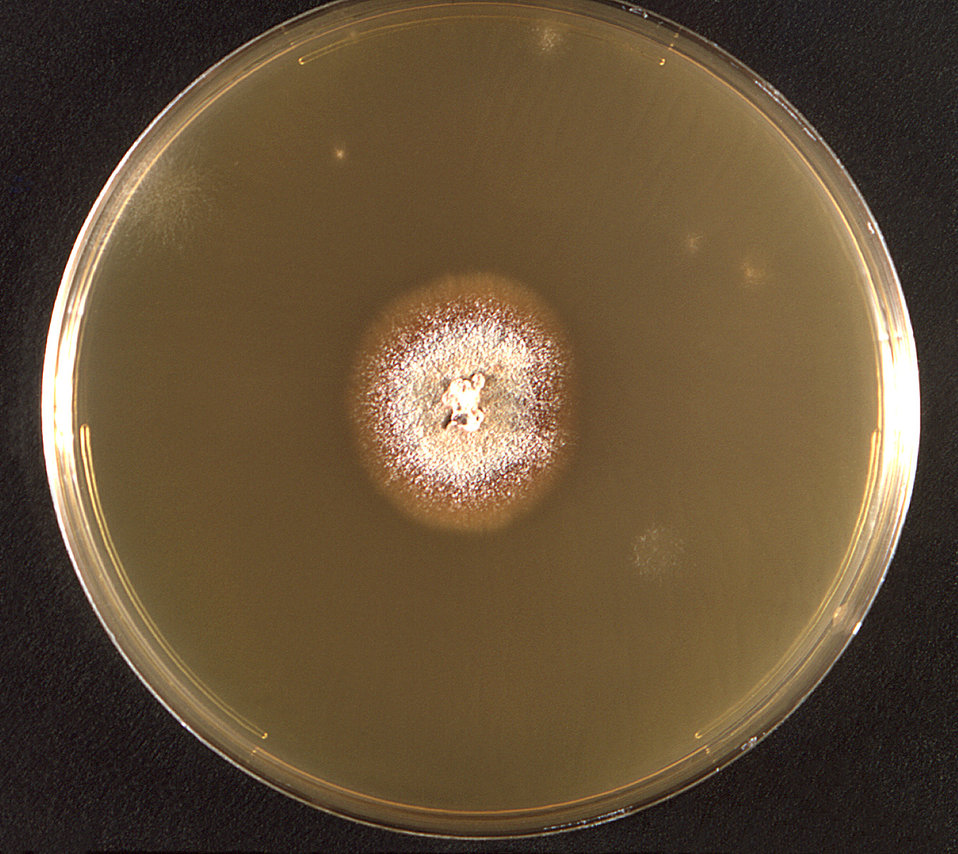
This is the frontal view of a Sabouraud's dextrose agar plate culture growing a colony of Trichophyton rubrum var. granulare. For a reverse view of this colony's appearance, see PHIL 10940.